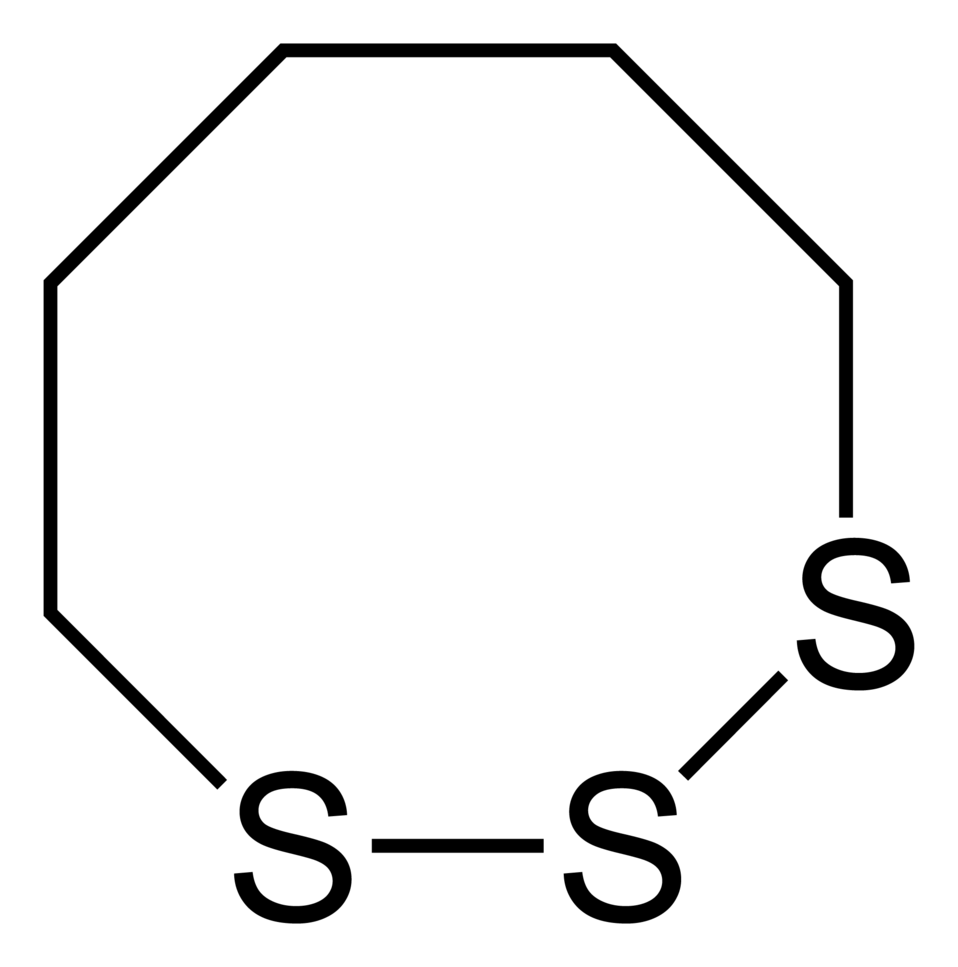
Skeletal formula of the 1,2,3-trithiocane molecule, C5H10S3.